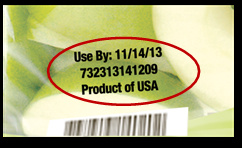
RECALLED – Apple slices

November 14, 2013 – Product Recall – Crunch Pak Issues Voluntary Recall of Limited Quantities of Crunch Pak Brand Apple Slices Because of Possible Health Risk.